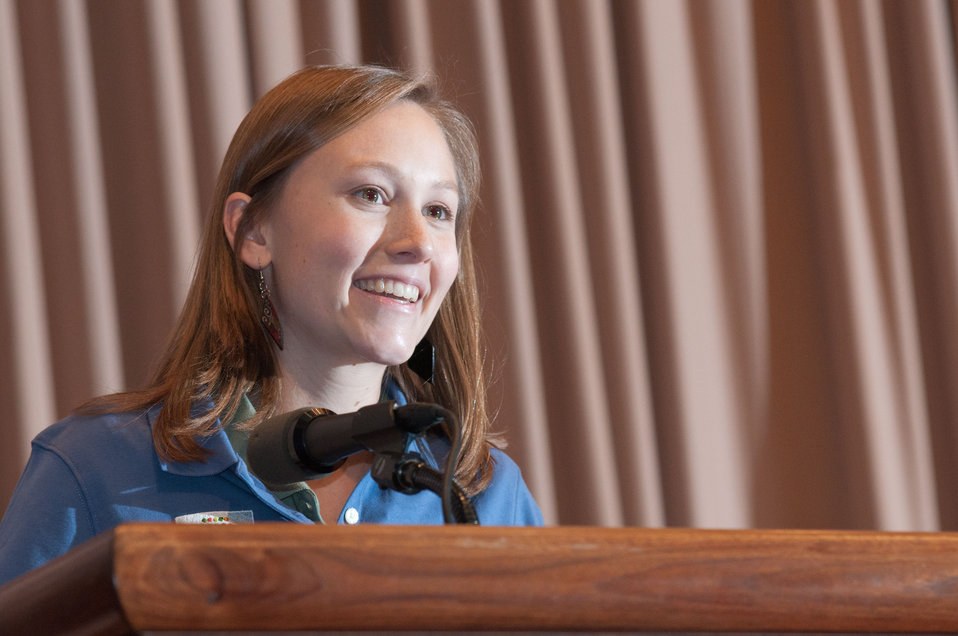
Graduation day of the 2011 U.S. Department of Agriculture (USDA) Executive Master Gardeners, on Tuesday, November 8, 2011 in Washington, DC. During the past six-weeks, students contributed 40-hours of volunteer time, completed studies and testing to receive their certificates today as an Executive Master Gardener. Many of the sessions occurred before work hours, during lunchtime or at community garden project sites such as Powell Middle School. USDA challenges its employees to establish People's Gardens at USDA facilities worldwide or in community gardens. People's Gardens vary in size and type, but all have a common purpose - to help the community and the environment. To learn about the People’s Garden Initiative visit www.usda.gov/wps/portal/usda/usdahome?contentid=peoples g....